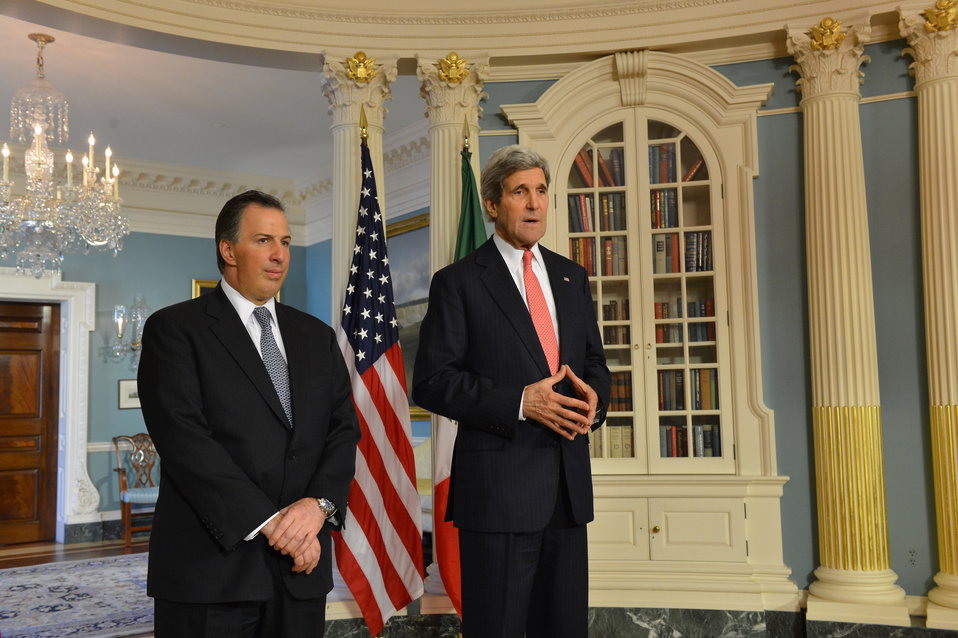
Secretary Kerry and Mexican Foreign Secretary Meade Address Reporters

U.S. Secretary of State John Kerry and Mexican Foreign Secretary Jose Antonio Meade address reporters after their bilateral meeting as part of the North American Trilateral Ministerial at the U.S. Department of State in Washington, D.C., on January 17, 2014.